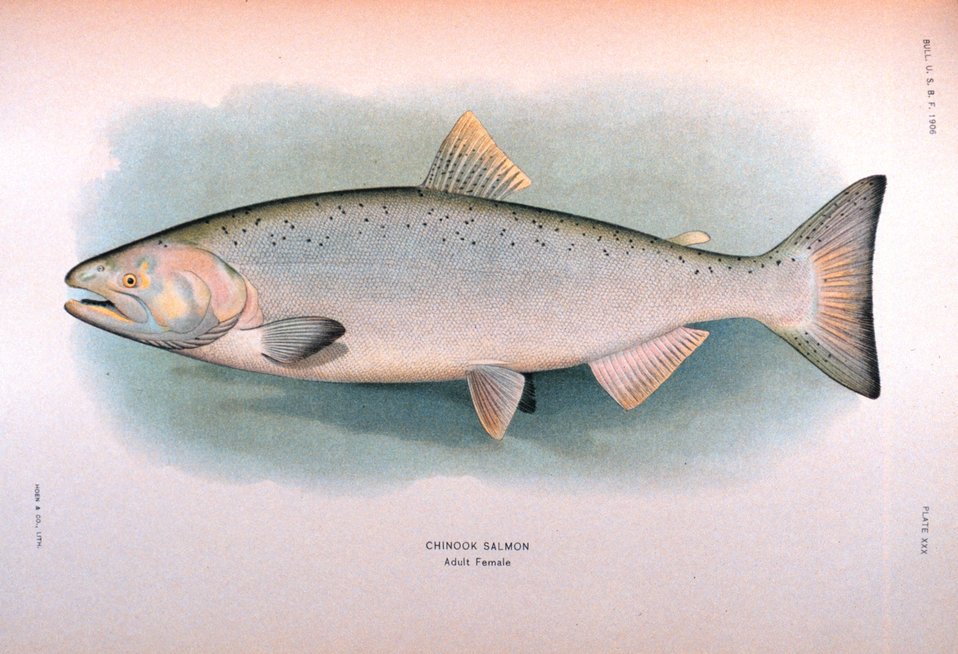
Chinook salmon, adult female. In: 'The Fishes of Alaska.' Bulletin of the Bureau of Fisheries, Vol. XXVI, 1906. P. 360, Plate XXX.